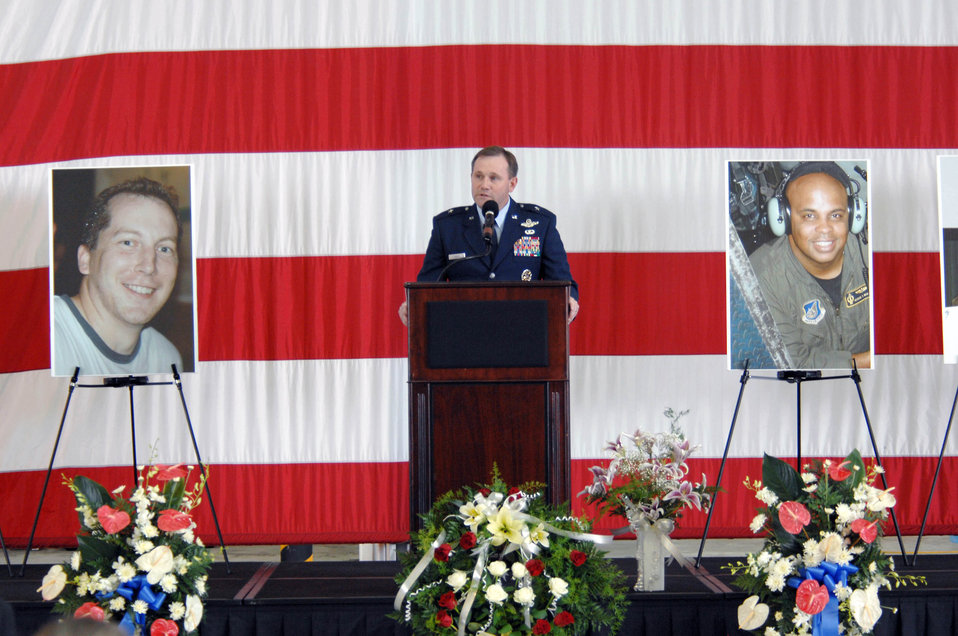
Raider 21 crew remembered

Brig. Gen. Doug Owens, 36th Wing commander, delivers a heartfelt message to more than 1,800 guests who attended a memorial ceremony July 25 at Andersen's Hangar One. The ceremony honored the six Airmen who died when their B-52 crashed July 21, 25 miles off the coast of Guam. Their mission was to flyover Guam's Liberation Day parade celebrating the island's liberation from Japanese occupation in World War II.